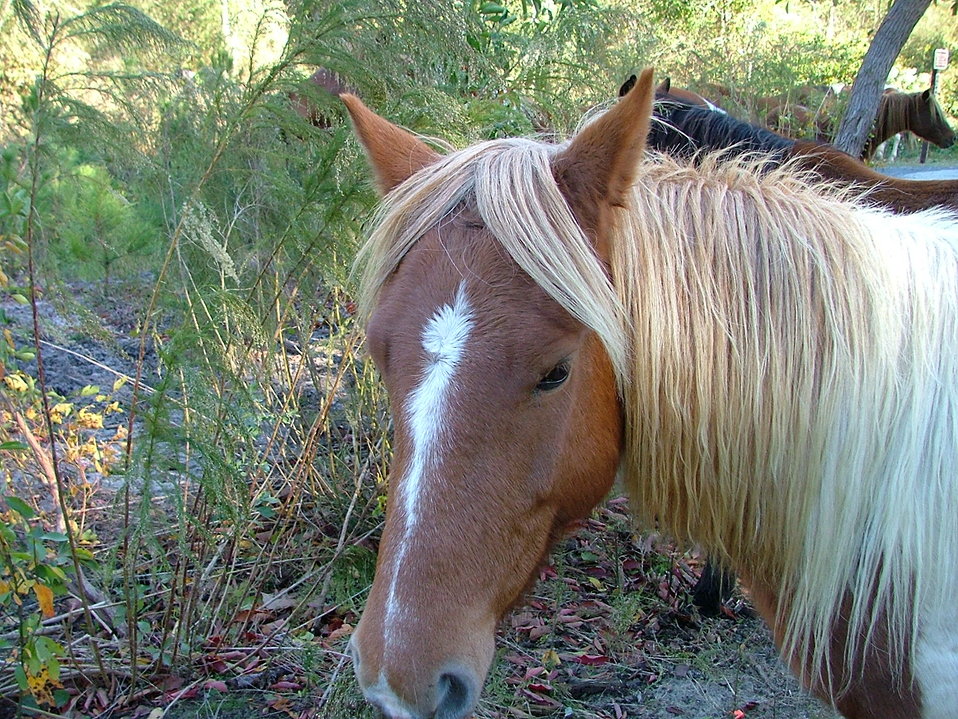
Chincoteague ponies after Hurricane Sandy (VA)

Chincoteague ponies grazing in the Lighthouse Trail parking lot after Hurricane Sandy.